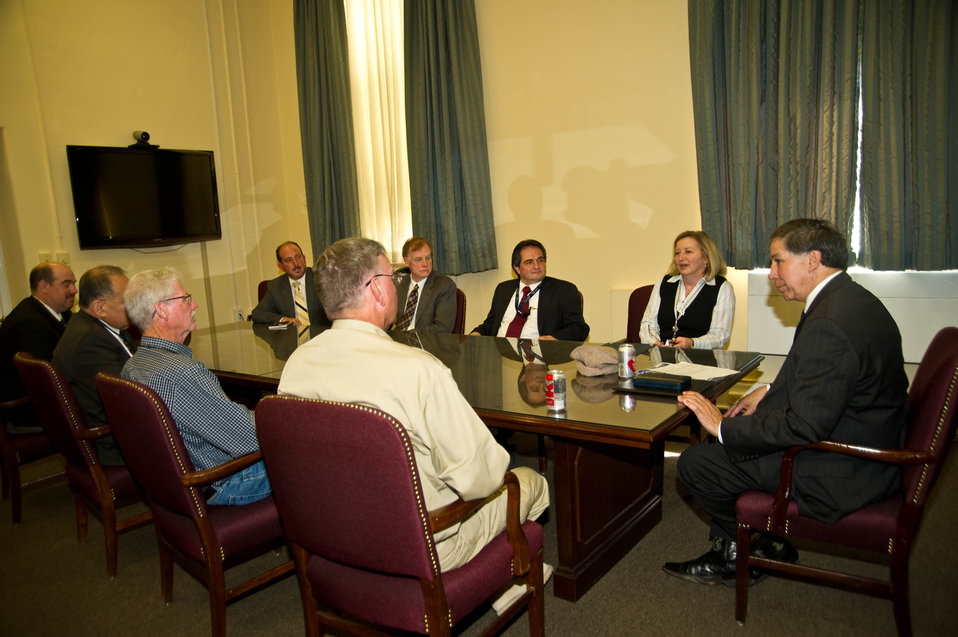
Agriculture Under Secretary for Marketing and Regulatory Programs (MRP) Edward Avalos meets with U.S. Department of Agriculture (USDA) Animal and Plant Health Inspection Service (APHIS) Wildlife Service Biologist New Mexico district supervisor Keel Price, and USDA APHIS Wildlife Service Biologist Idaho State director George Graves on Tuesday, Mar. 19, 2013. Avalos discussed the work the biologists did to reduce aircraft hazards at Bagram Airbase and Kandahar Airfield in Afghanistan.